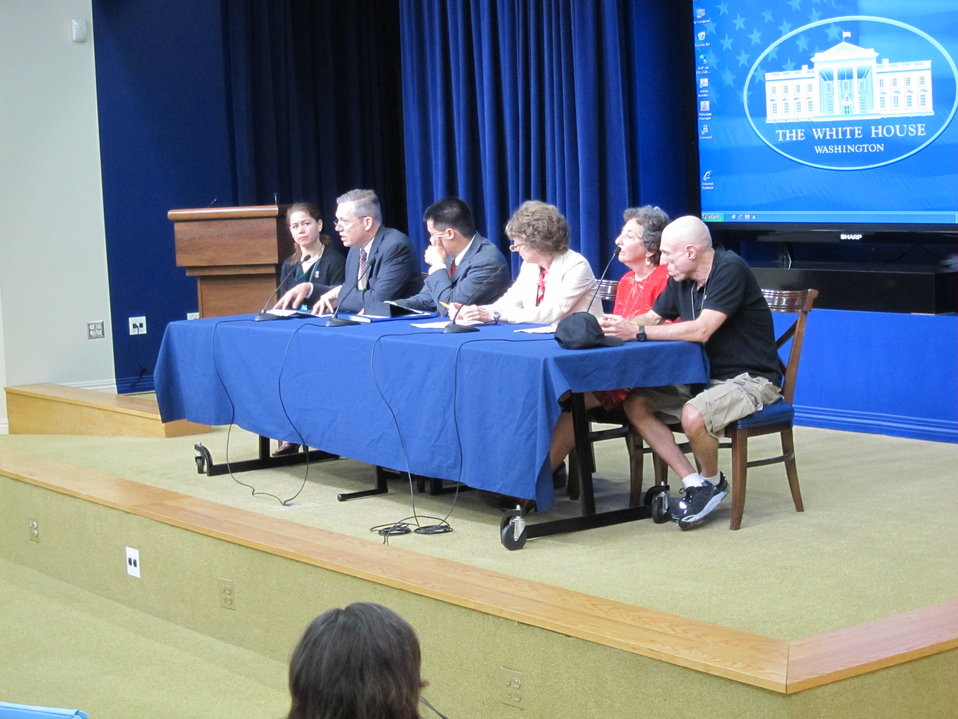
WH 2012 World Hepatitis Day Event